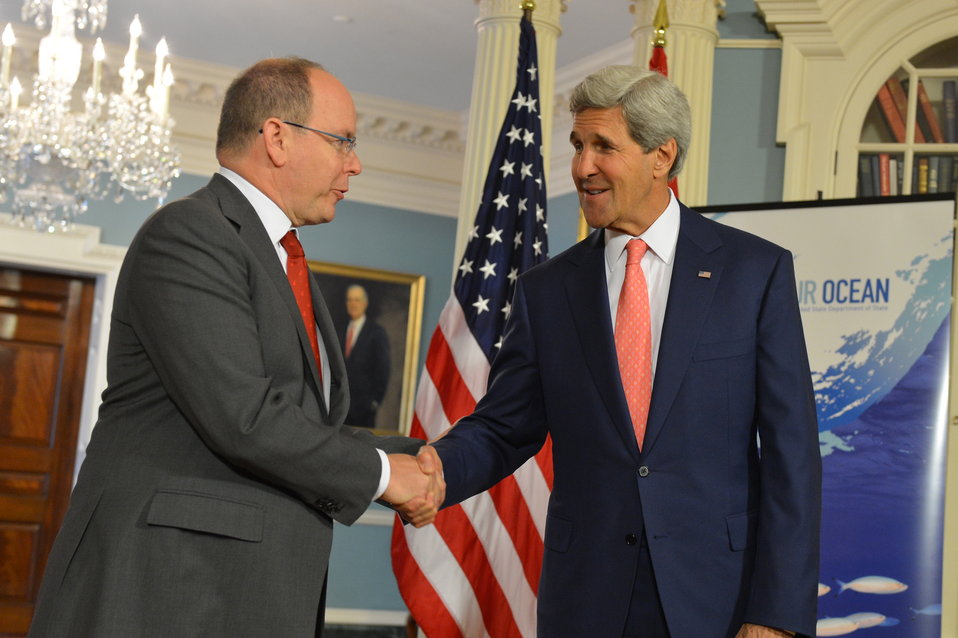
Secretary Kerry Shakes Hands With Prince Albert II of Monaco

U.S. Secretary of State John Kerry meets with Prince Albert II of Monaco, at the U.S. Department of State in Washington, D.C. on June 16, 2014.